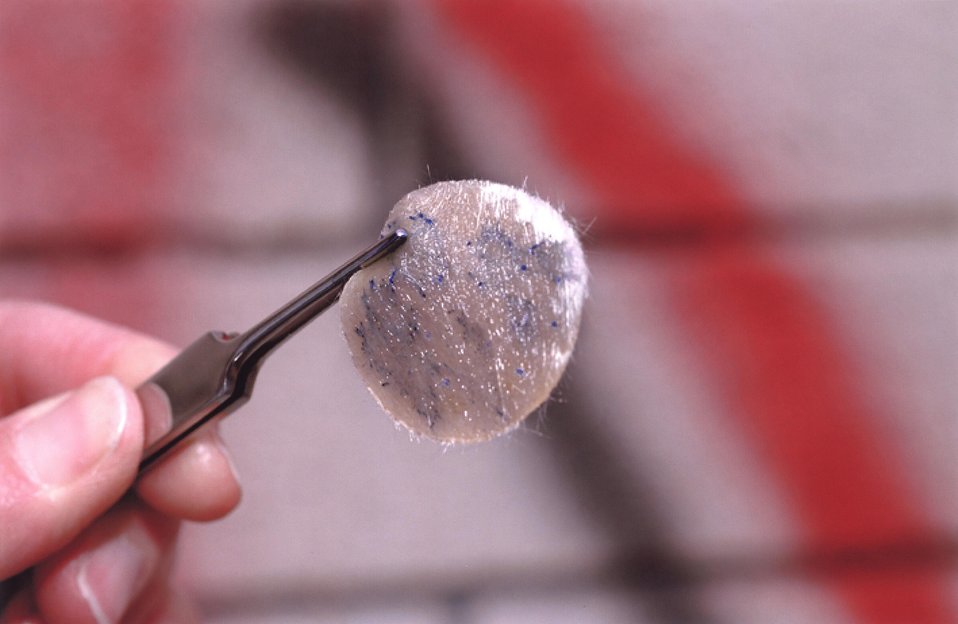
A FIBERGLASS SWAB THAT IS PART OF A NEW SANDIA DEVELOPED INSTANT SHOOTER ID KIT.

WHEN A GUN IS FIRED, THE SHOOTER GETS SPRAYED WITH AN INVISIBLE BLAST OF CHEMICAL RESIDUES. SANDIA WORKING WITH A COLORADO COMPANY, DEVELOPED A GUNSHOT RESIDUE DETECTION TECHNIQUE THAT IDENTIFIES VERY SMALL AMOUNTS CHEMICAL CLUES ON A PERSON'S HANDS, ARMS OR CLOTHING. THIS WILL HELP POLICE OFFICERS AT A CRIME SCENE QUICKLY IDENTIFY A SUSPECT WHO HAS RECENTLY FIRED A GUN.